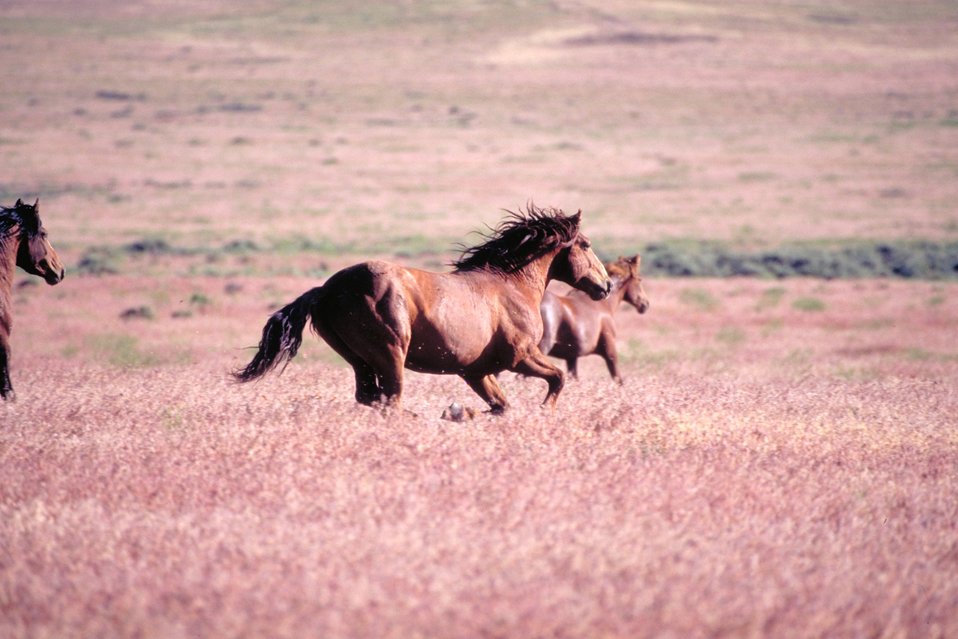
Onaqui Herd near Dugway, Utah.